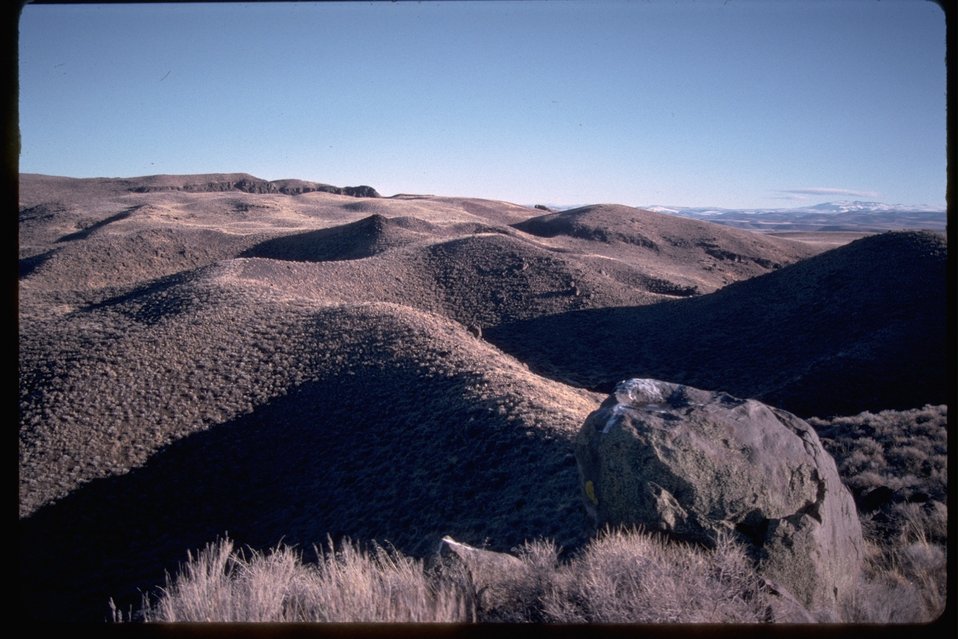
Winter evening light/shadows at Diamond Craters Outstanding Natural area.